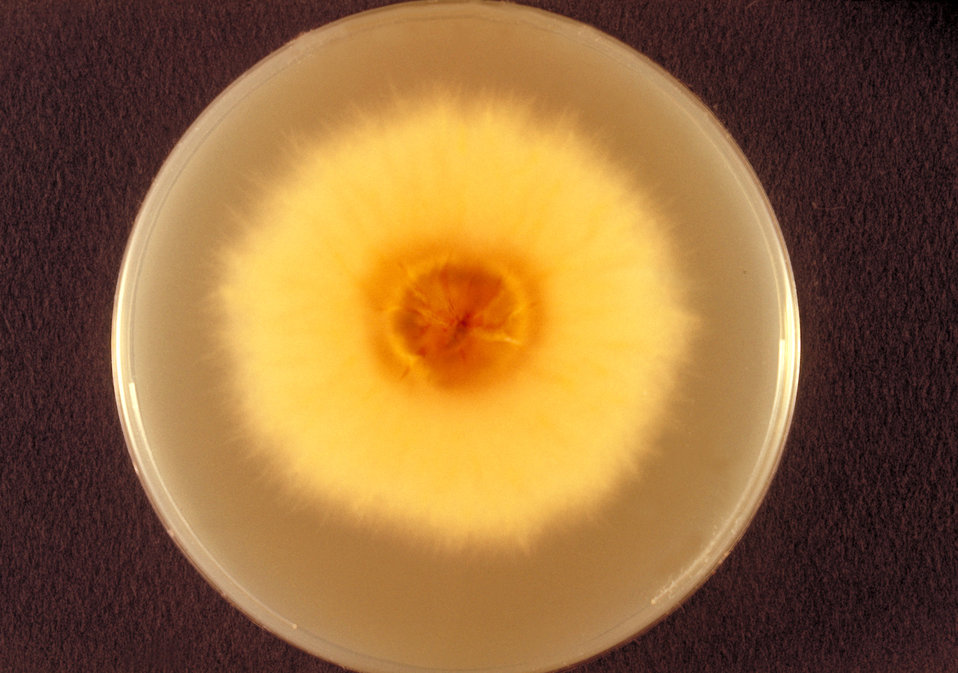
This is a reverse (bottom) view of a Sebouraud's dextrose agar plate culture growing a colony of Microsporum persicolor.